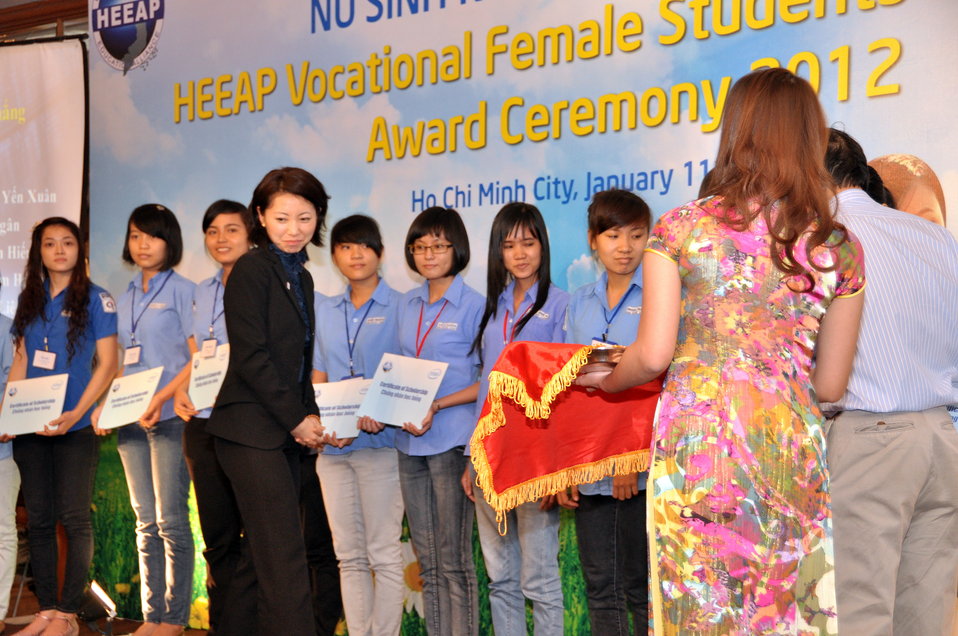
KC Choe of USAID Vietnam presents Female Vocational Student Scholarships

Ho Chi Minh City, January 11, 2013